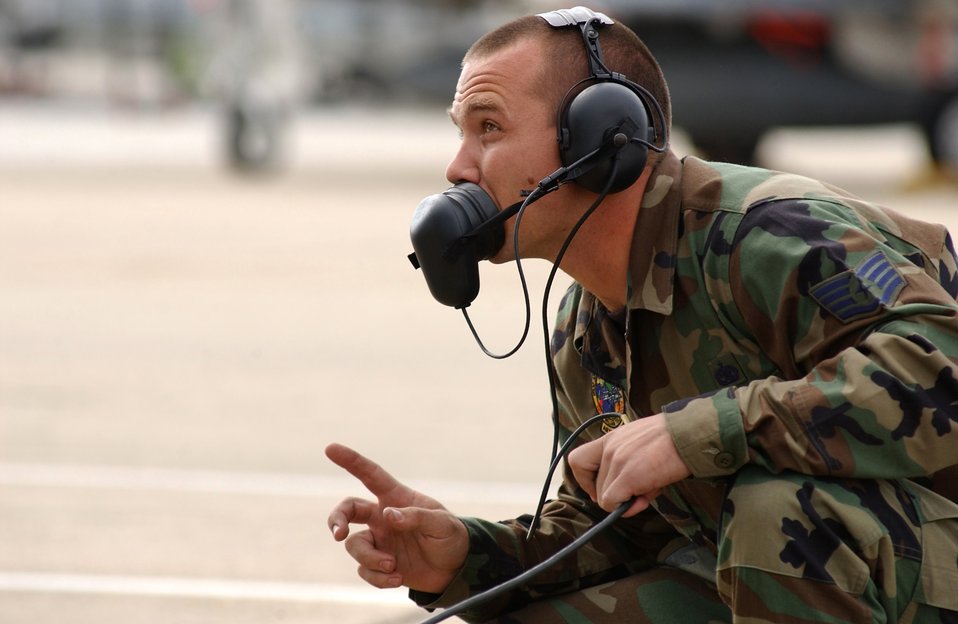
William Tell 2004

TYNDALL AIR FORCE BASE, Fla. -- Staff Sgt. Nick Pomonis pre-flights an F-15 Eagle taking part in a scenario during William Tell 2004 here recently. The two weeks of competition will challenge pilots, weapons loaders and maintainers from five F-15 fighter wings. Sergeant Pomonis is a crew chief assigned to the 95th Aircraft Maintenance Unit.